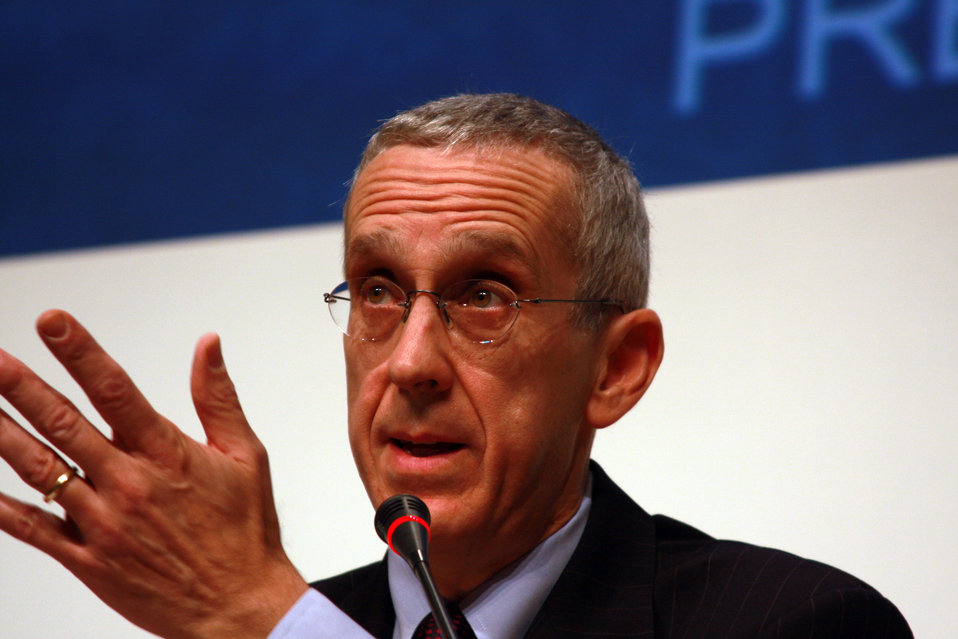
Press briefing by U.S. Special Envoy for Climate Change Todd Stern at COP15 (Conference of the Parties to the UN Framework Convention on Climate Change) in Copenhagen, Denmark December 10, 2009.